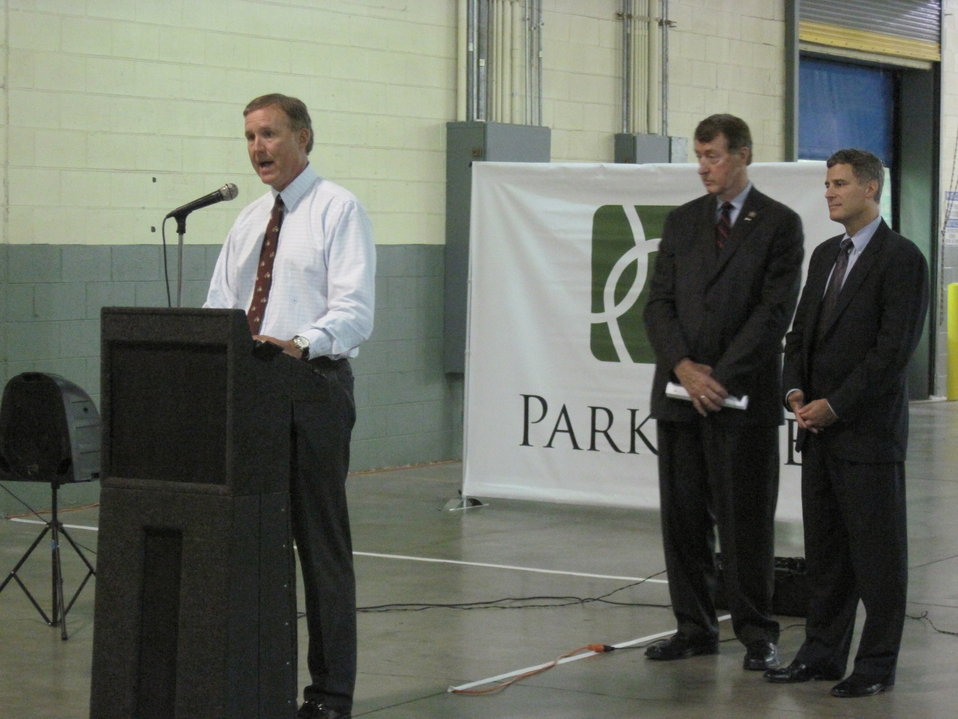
Krueger in NC, 7/12/10

Andy Warlick, President and CEO of Parkdale Mills, speaking at the yarn manufacturer's recently reopened a plant in Sanford and has already hired more than 30 workers who are eligible for HIRE Act tax exemptions, a number that will likely grow as they continue to add more workers.

'This new tax credit provided a powerful incentive to grow our business and was a major factor in our decision to re-open the plant in Sanford,' said Andy Warlick, President and CEO of Parkdale Mills. 'It's an example of tax policy that's done the right way – that's not about off-shoring but about re-shoring, and it's helping us create jobs here.'